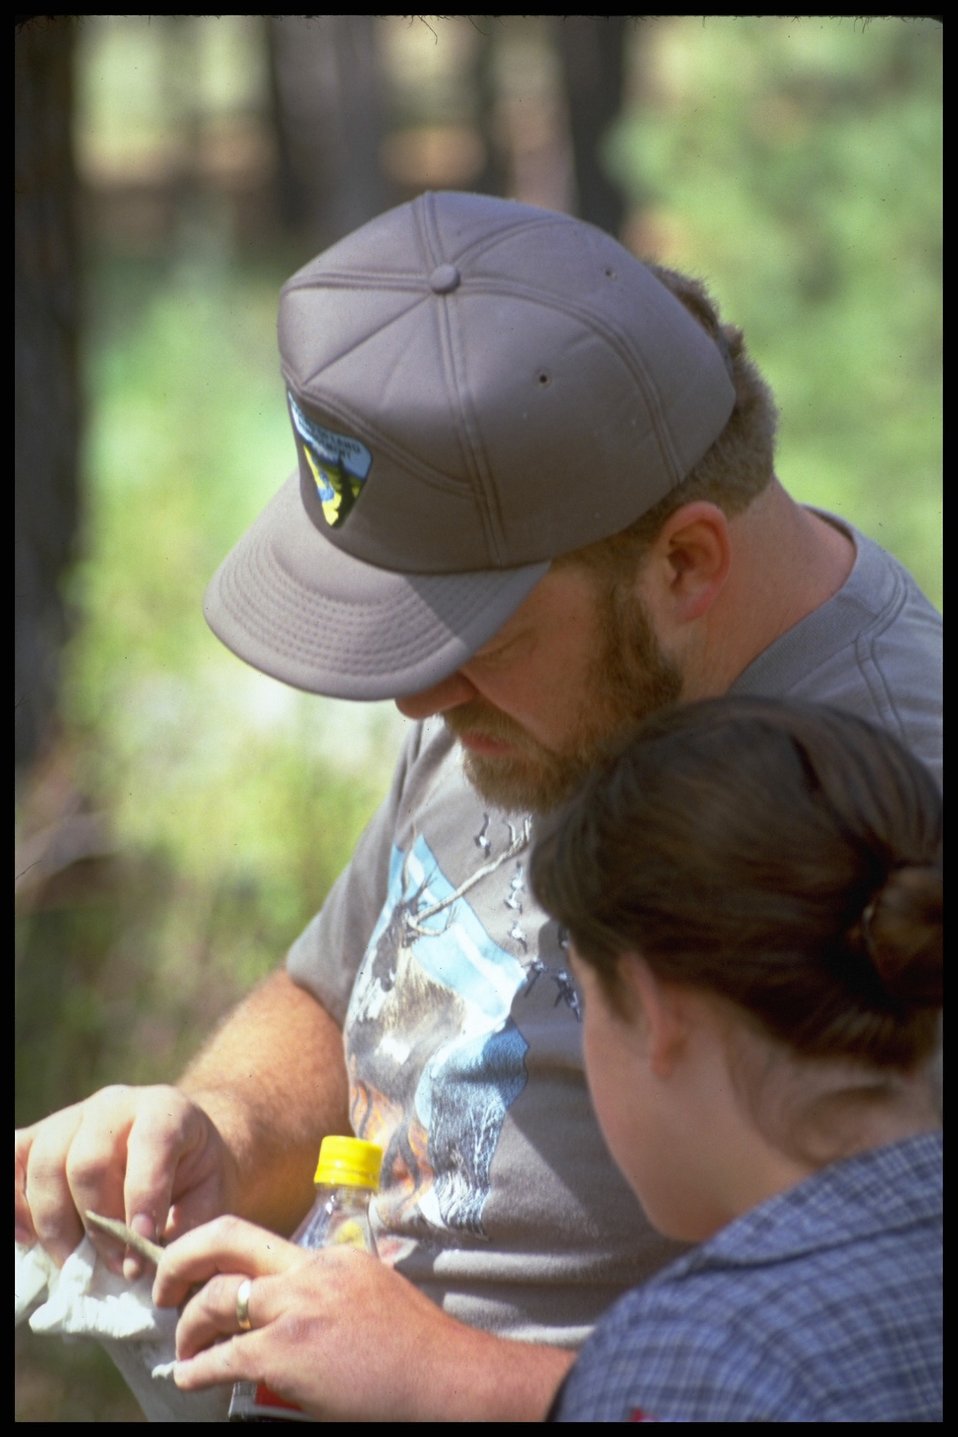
Neo Tropical Bird Day, Lakeview District.